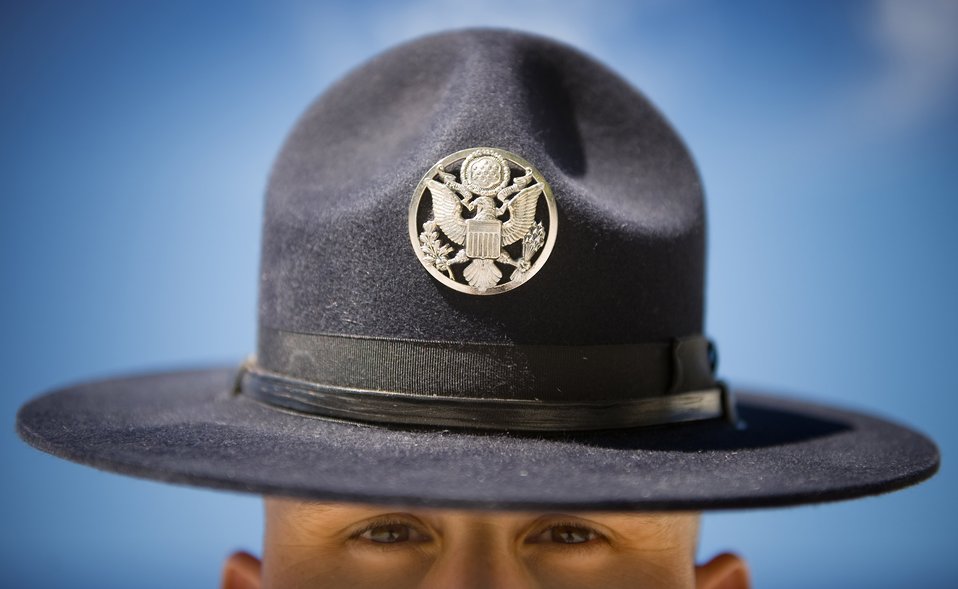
My eyes are on you!

Tech. Sgt. James Woods stares trainees into their eyes as they go through their fourth week of basic military training at Lackland Air Force Base, Texas. Sergeant Woods is military training instructor for the 737th Training Support Squadron.